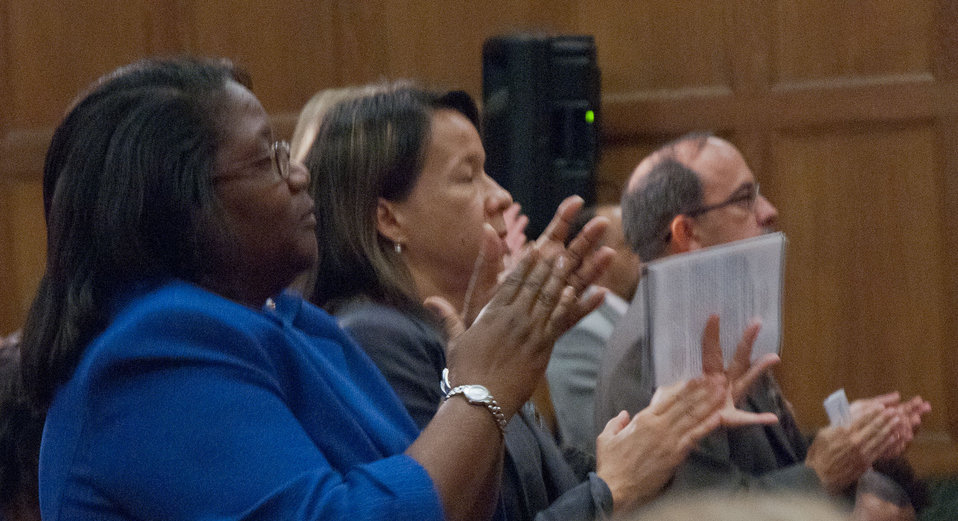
The audience gives a standing ovation to Agriculture Secretary Tom Vilsack at the end of his keynote address for National Hispanic Heritage Month at the United States Department of Agriculture (USDA) in the Jefferson Auditorium in Washington, D.C. on Thursday, September 15, 2011.